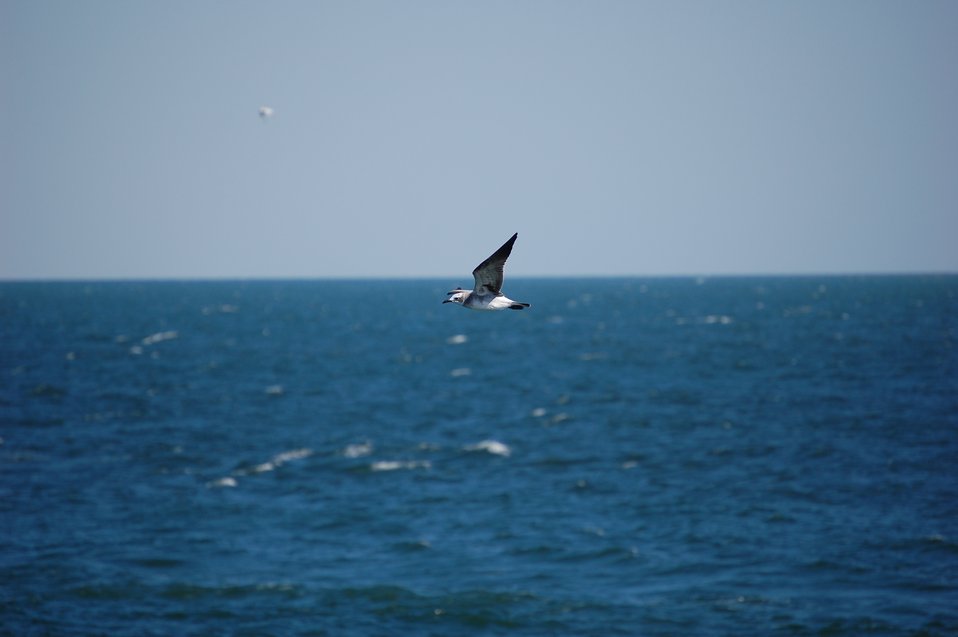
Second cycle laughing gull in flight